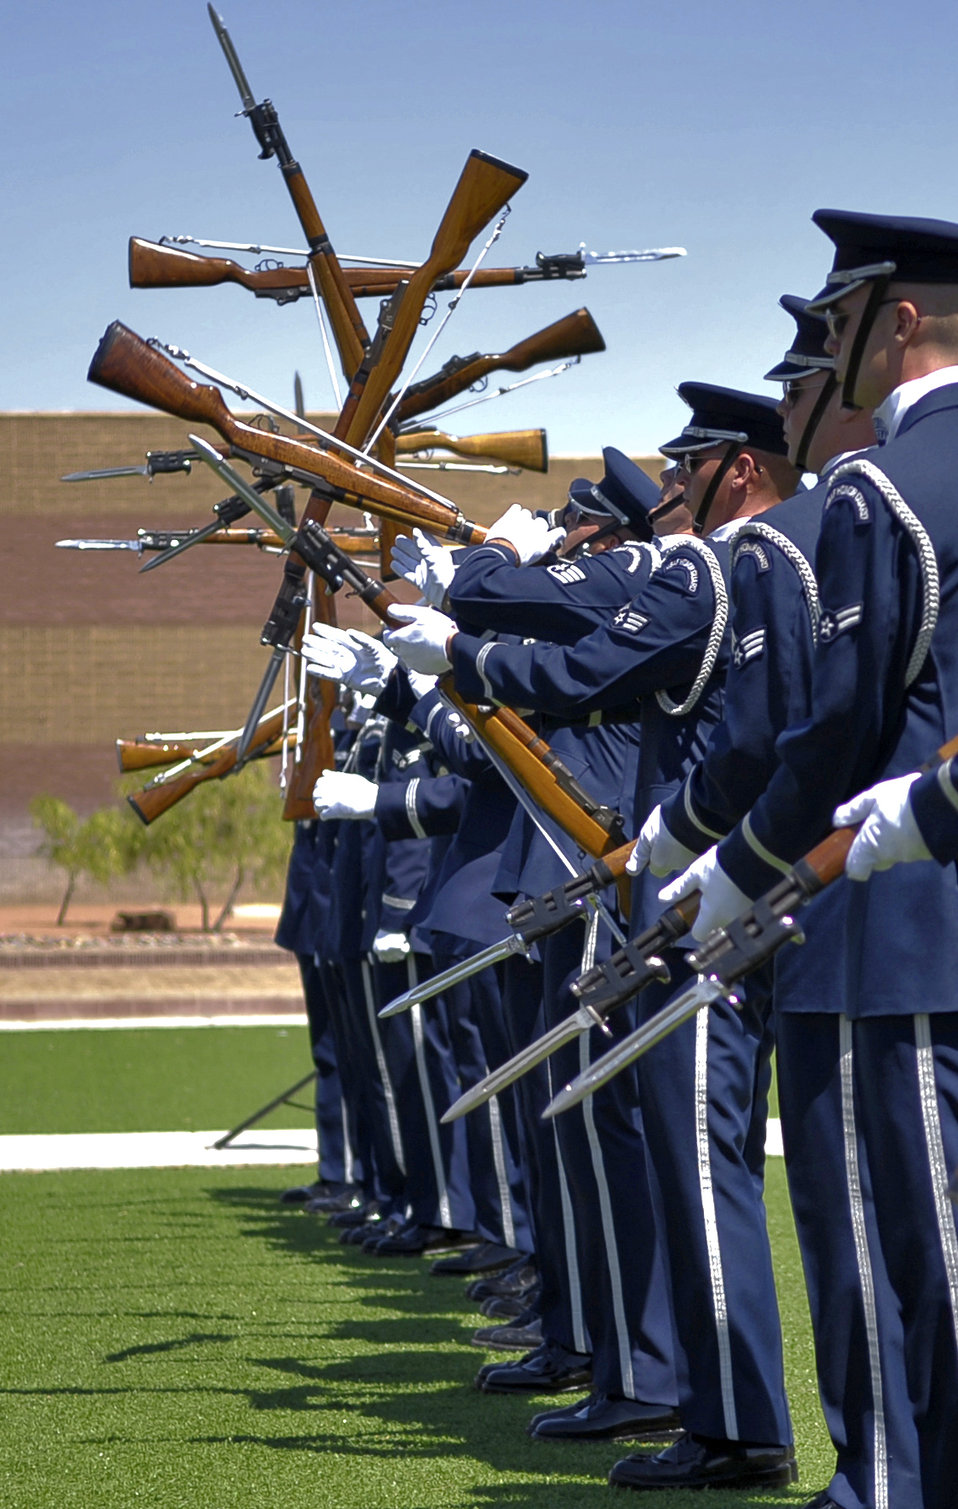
Precise timing

Sixteen members of the U.S. Air Force Honor Guard Drill Team perform for members and families Aug. 6, 2010, at Holloman Air Force Base, N.M. The drill team shows off Air Force precision, discipline, teamwork and professionalism.